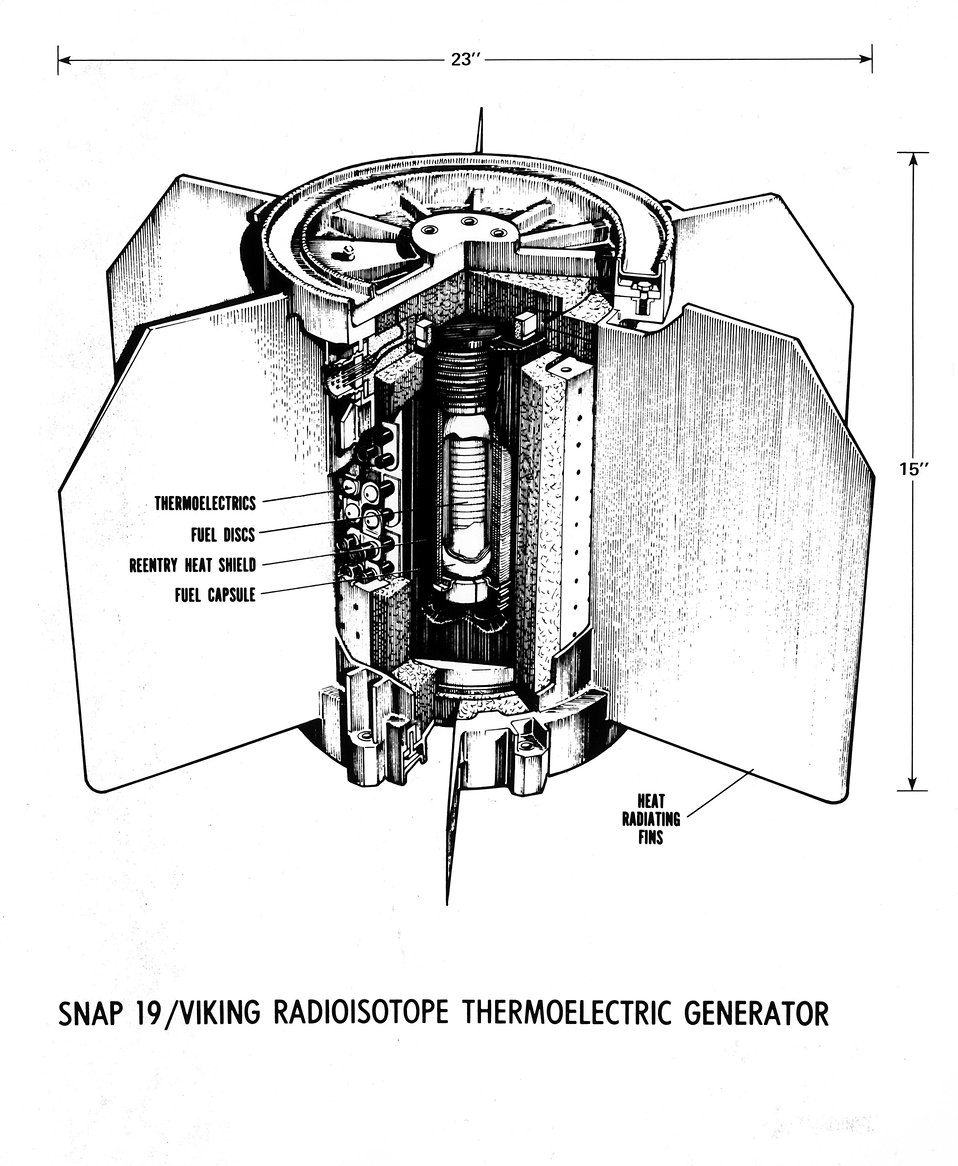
Cutaway of the Plutonium-238 SNAP-19/Viking radioisotope thermometric generator (atomic battery). Two of these ERDA-developed generators will provide a total of 70 watts of electrical power for the NASA Viking/Mars lander which is to be parachuted on the planet from an orbiting vehicle in July 1976. Circa 1971.